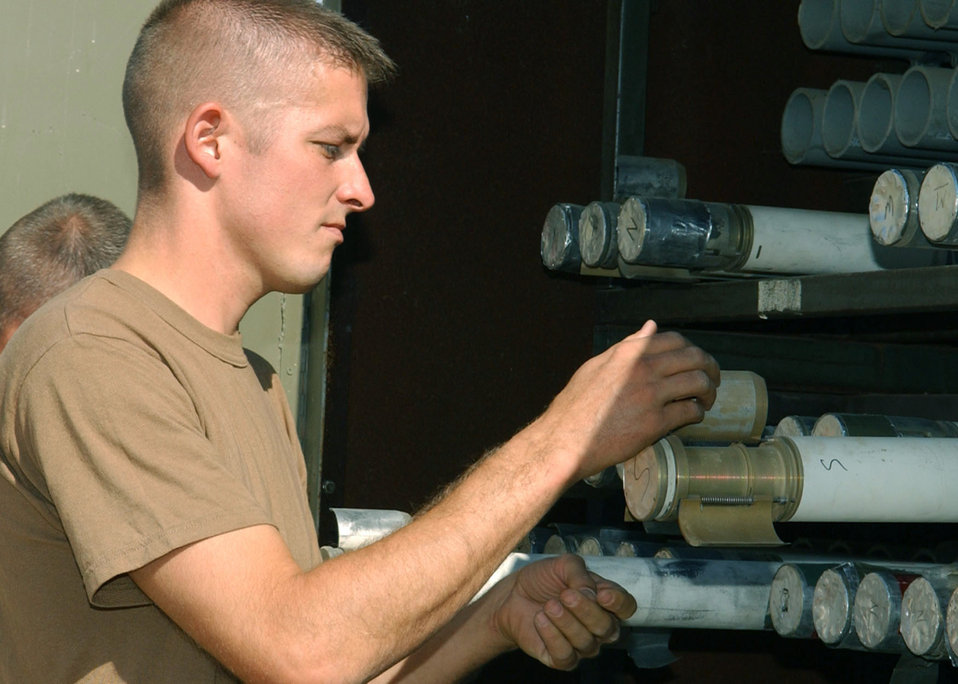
Bagram Airmen build bombs for better tomorrow

BAGRAM AIR BASE, Afghanistan -- Tech. Sgt. Daniel Hamilton inspects rocket fins to ensure they will open correctly when needed. The conventional munitions crewmember is an Air Force reservist deployed to Afghanistan from Naval Air Station Joint Reserve Base New Orleans.